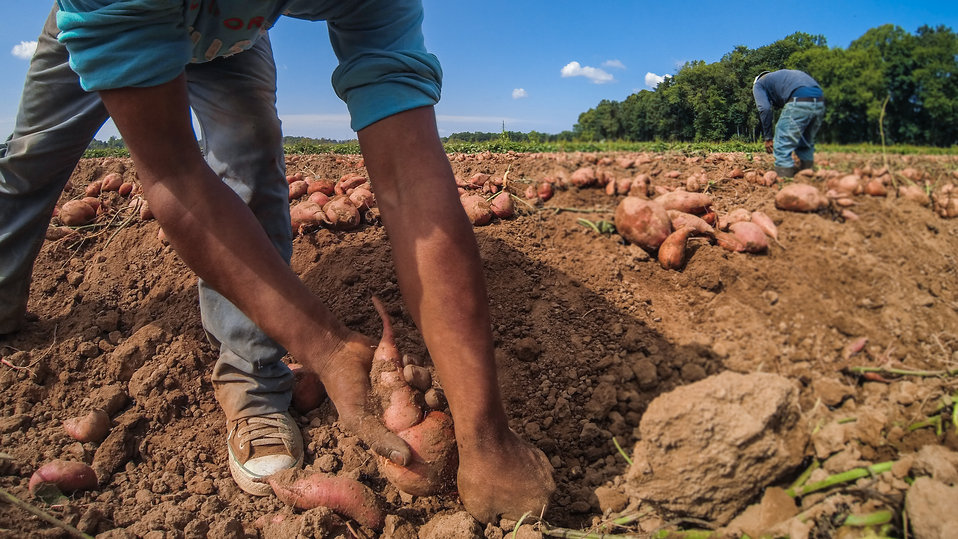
Migrant workers pick, separate, and process sweet potatoes at Kirby Farms in Mechanicsville, VA on Friday, Sept. 20, 2013. 200 acres of the farm are devoted to eggplant, spinach, beets, tomato, jalapeno peppers, melons and a variety of greens. Soybeans and small grain are grown on the remaining 300 acres. Using rotational crop practices allows Kirby Farms to double and triple crop yields. Wholesalers, who buy from this farm, sell the produce to major supermarkets in the Mid-Atlantic region, from North Carolina to Maryland. Restaurants in the local area prepare and serve the local bought produce to patrons in the Richmond, VA metropolitan area.